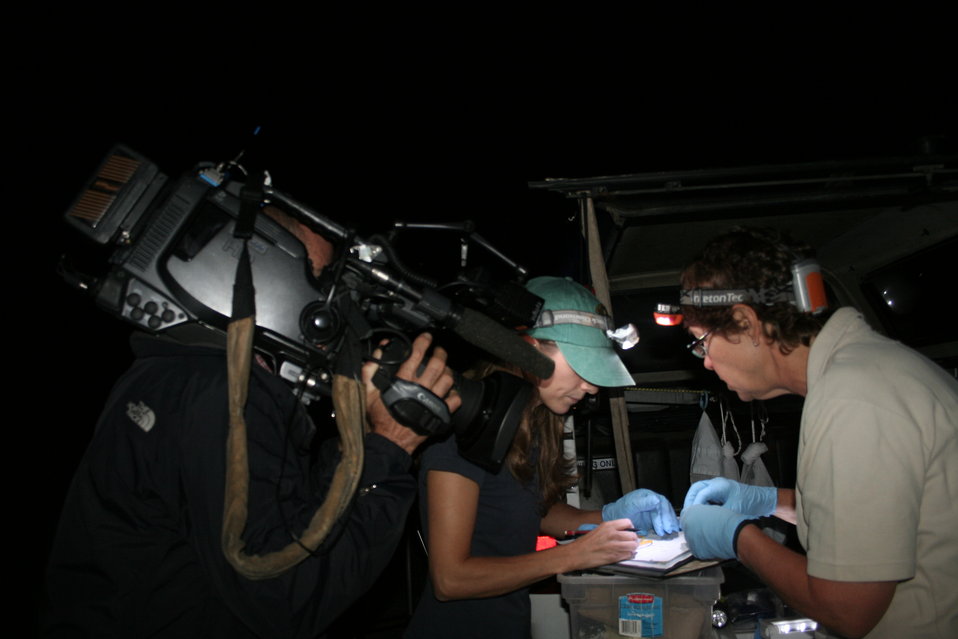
CBS News camera filming biolgists

CBS News camera films USFWS endangered species biologist Susi von Oettingen and VT DFW wildlife technician Alyssa Bennett working up a little brown bat